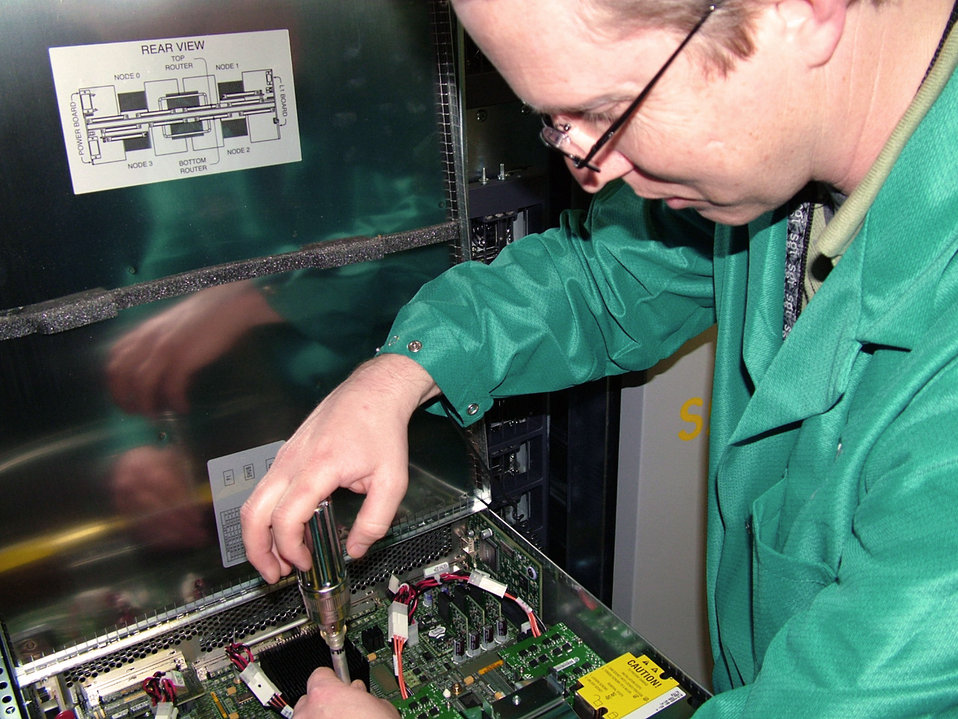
Center receives DOD's most powerful supercomputer

WRIGHT-PATTERSON AIR FORCE BASE, Ohio -- Kevin Maloney installs the newest high performance computer system in Aeronautical Systems Center's major shared resource center here. The new system expands the resource center's supercomputing capability to more than 4,100 processors spread across five separate shared memory systems. Mr. Maloney is with a contractor providing onsite support.